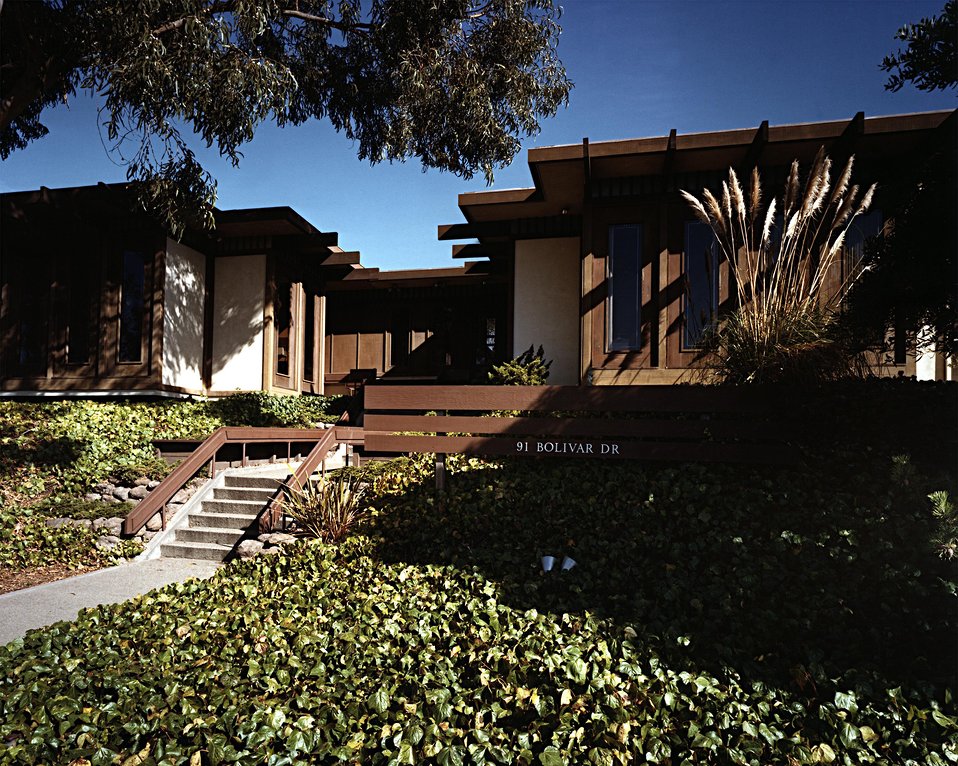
FRONT VIEW OF THE LABORATORY BUILDING.

THE PROCESS EVALUATION UNIT IS USED TO TEST VARIOUS METHODS OF CONVERTING BIOMASS INTO FUEL OIL. ONE OF THE LIQUEFACTION METHODS INVOLVES REACTING THE BIOMASS WITH CARBON MONOXIDE AND HYDROGEN UNDER HIGH TEMPERATURES AND PRESSURES IN THE PRESENCE OF CATALYSTS.